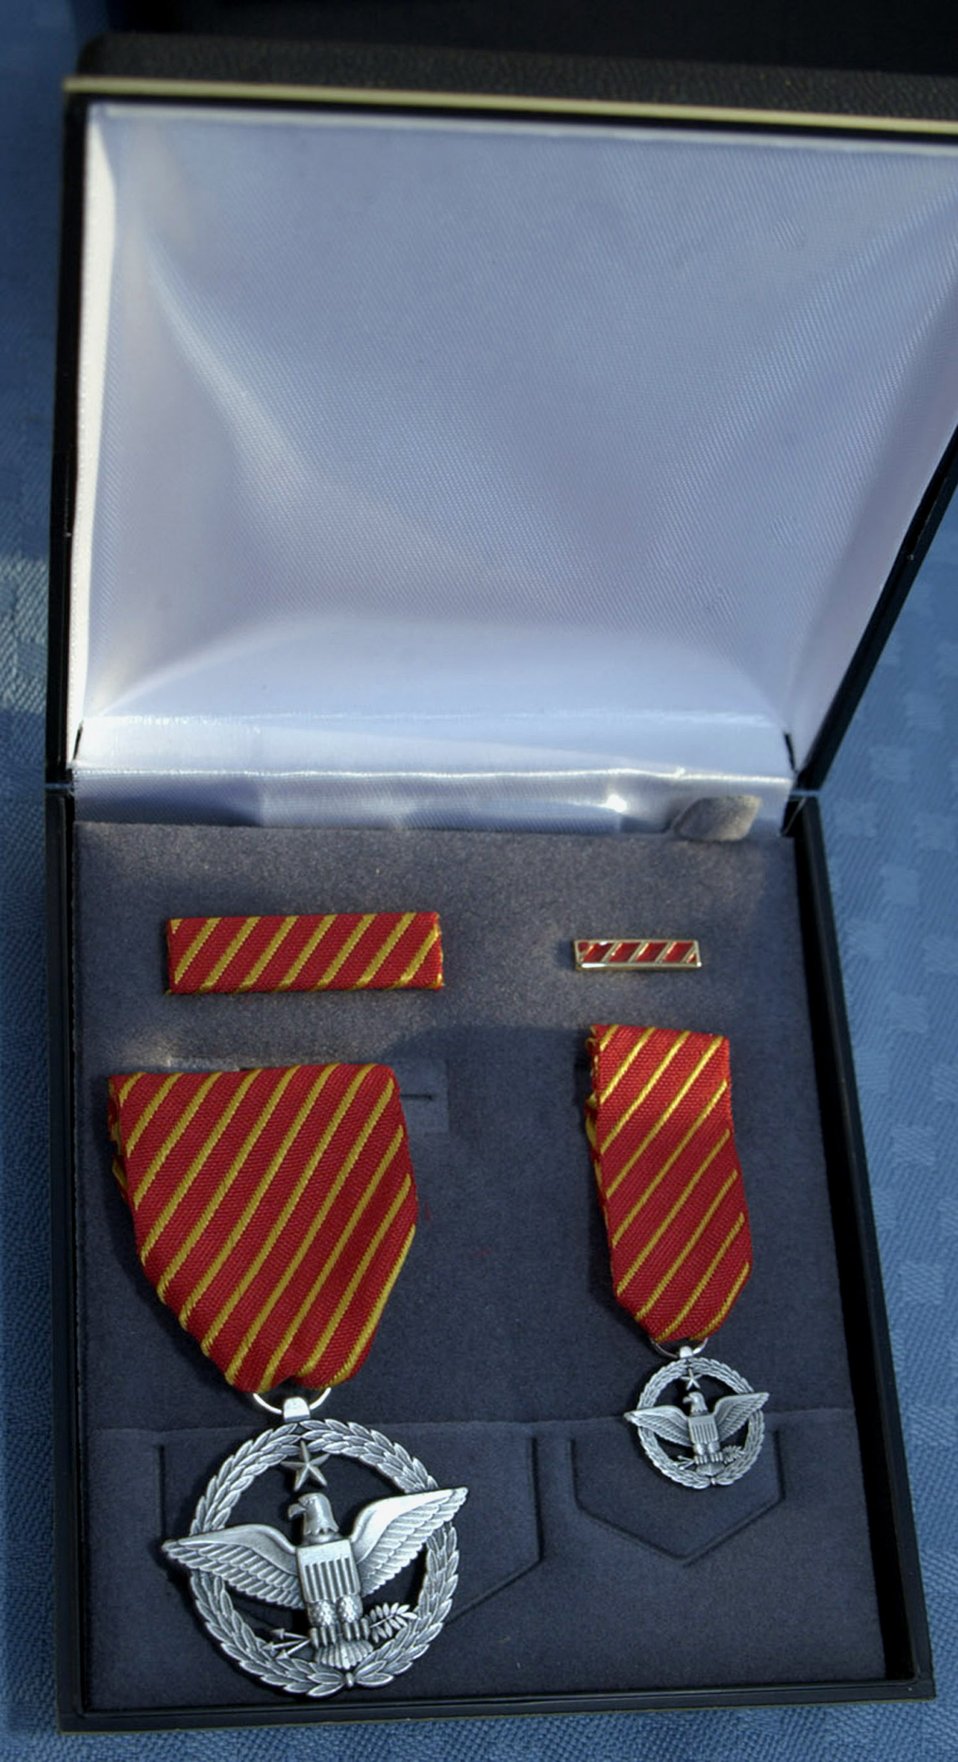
Air Force Combat Action Medal

The Air Force Combat Action Medal takes its design from the aircraft of Air Force pioneer Brig. Gen. William